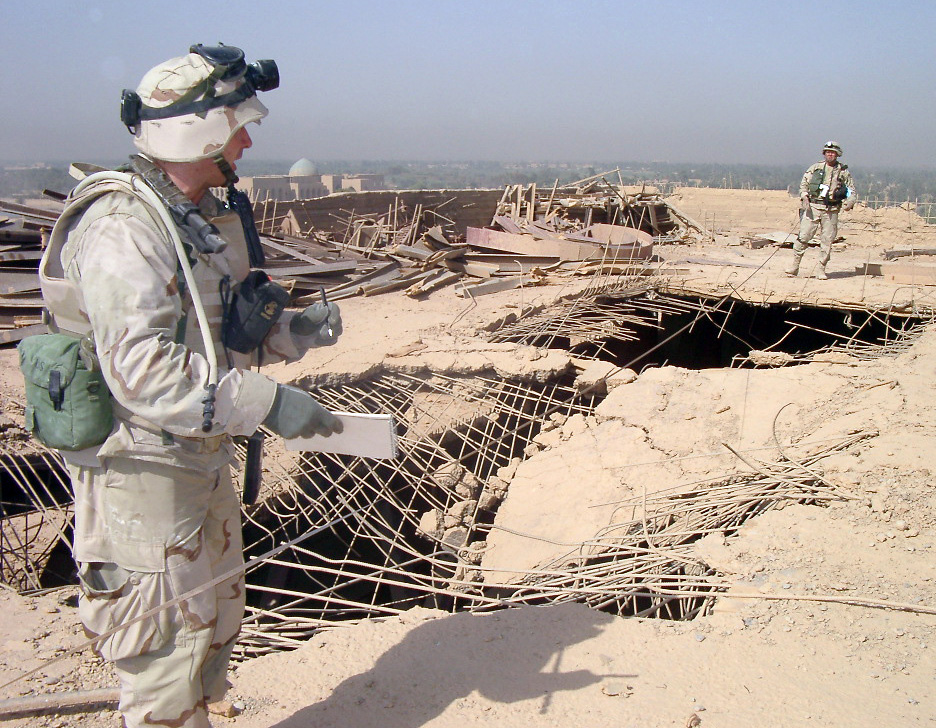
Remnants of headquarters

BAGHDAD, Iraq -- Maj. Craig Baker (left) and Staff Sgt. Zach Porter take measurements on the roof of the Ba'ath Party headquarters building, which was struck by coalition precision-guided munitions during Operation Iraqi Freedom. The airmen are among nearly 100 experts of the Combined Weapons Effectiveness Assessment Team. The team has visited more than 100 of a planned 500 sites to assess how well coalition weapons achieved their intended effects during Operation Iraqi Freedom. It will report its findings to U.S. Central Command this fall.